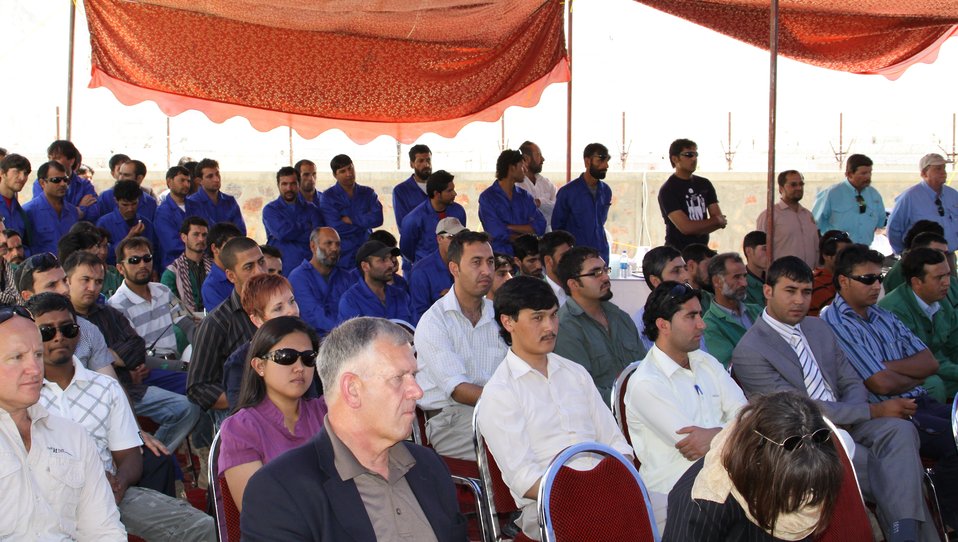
105 MW Tarakhil Power Plant Handover